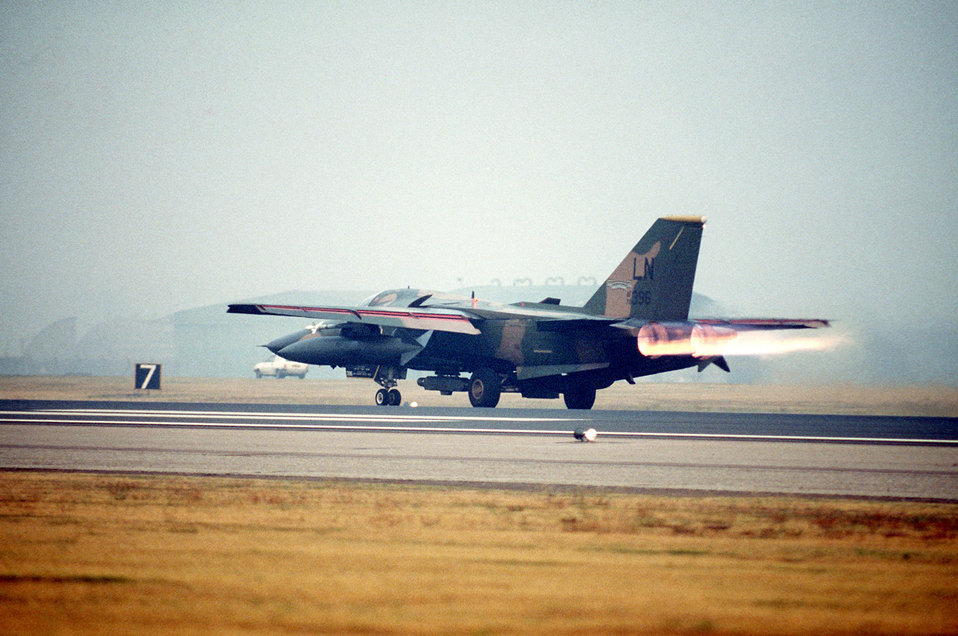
F-111F Raven

1990's -- A 48th Tactical Fighter Wing F-111F Raven aircraft departs for Saudi Arabia in support of Operation Desert Shield.